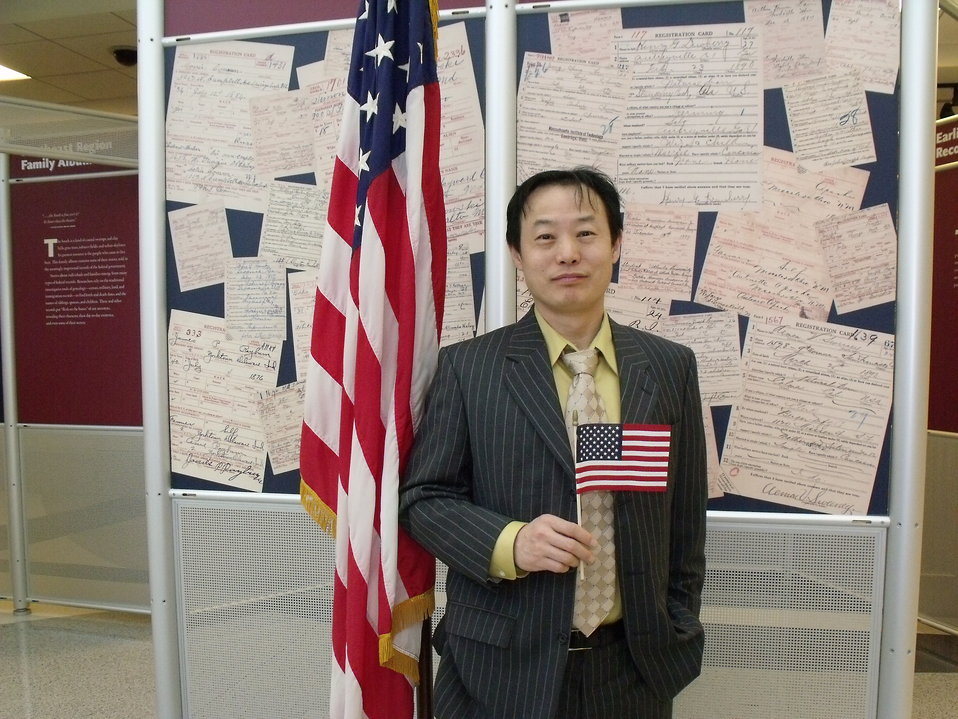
New Citizens